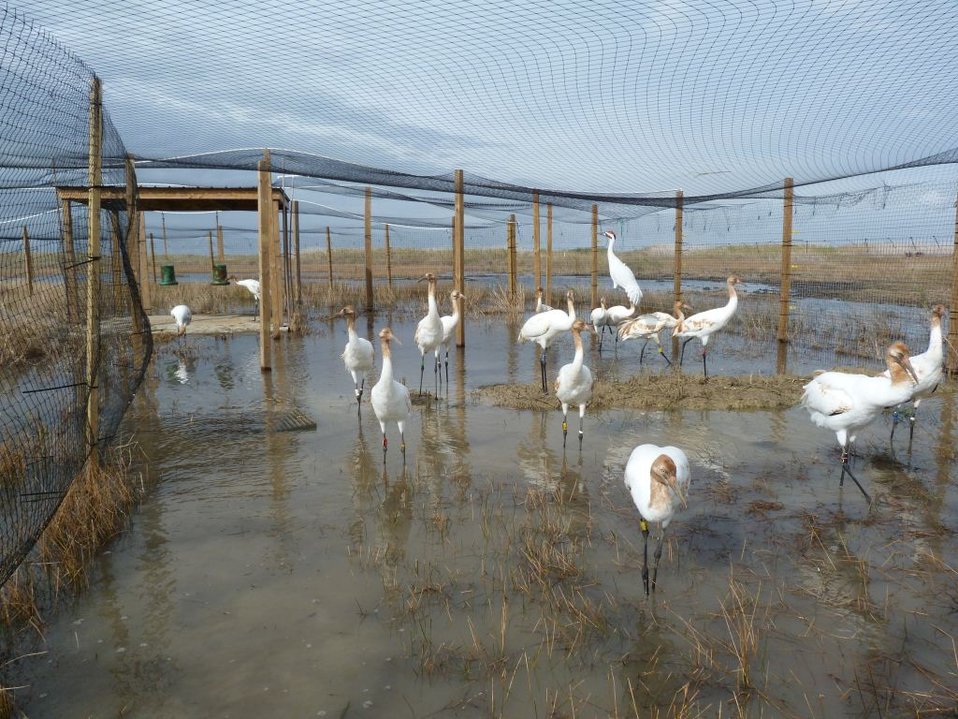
Whooping Crane Reintroduction Pen

All 16 members of the LA class of 2011. They are held temporarily in the top-netted pen to give them time to acclimate to their new surroundings and give the Louisiana Department of Wildlife and Fisheries time to attach their permanent
bands and transmitters.